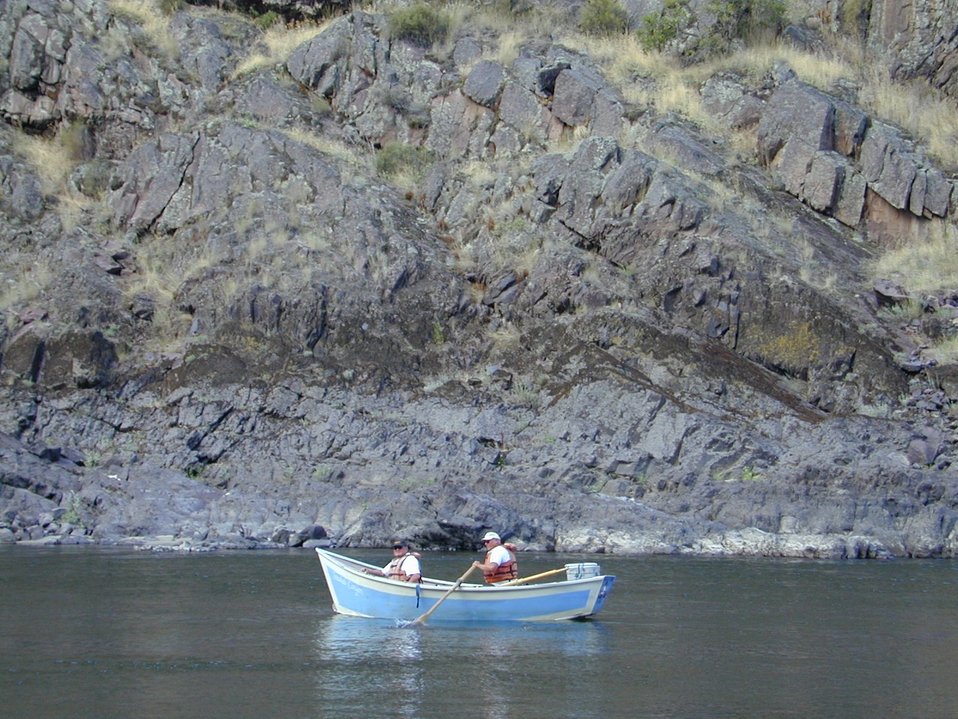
Recreation Dory boat on Lower Salmon River Cottonwood Field Office UCSC Upper Columbia Salmon Clearwater District